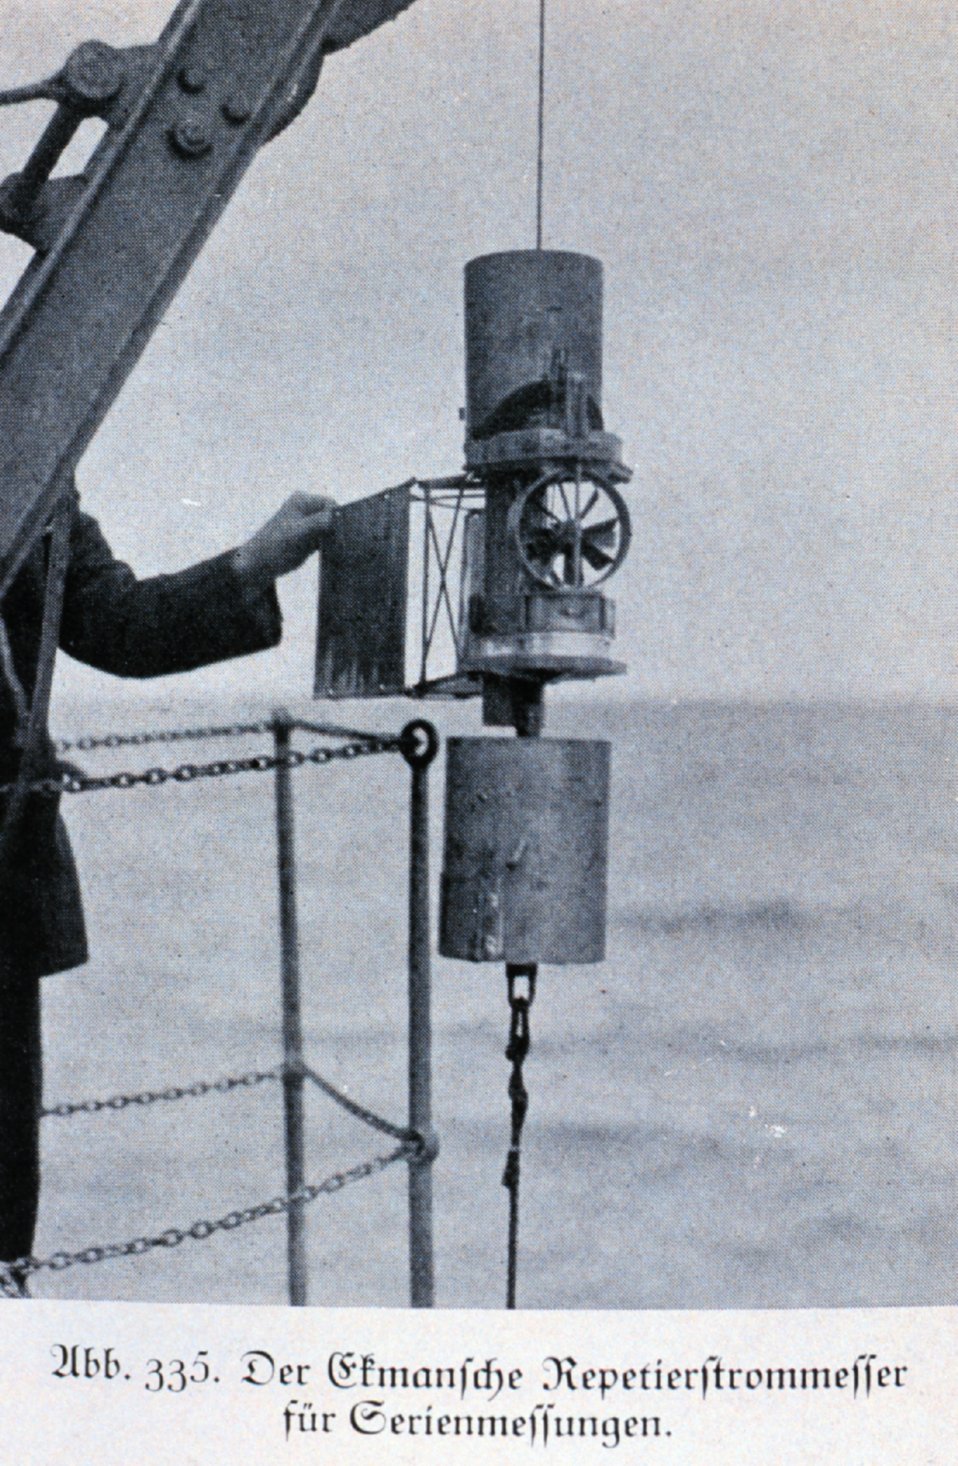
In: 'The Meteor Expedition,' by F. Spiess, German Atlantic Expedition 1925-1927. Deploying a current meter from the METEOR. Plate 103. Library Call Number Q115.D45 1928.